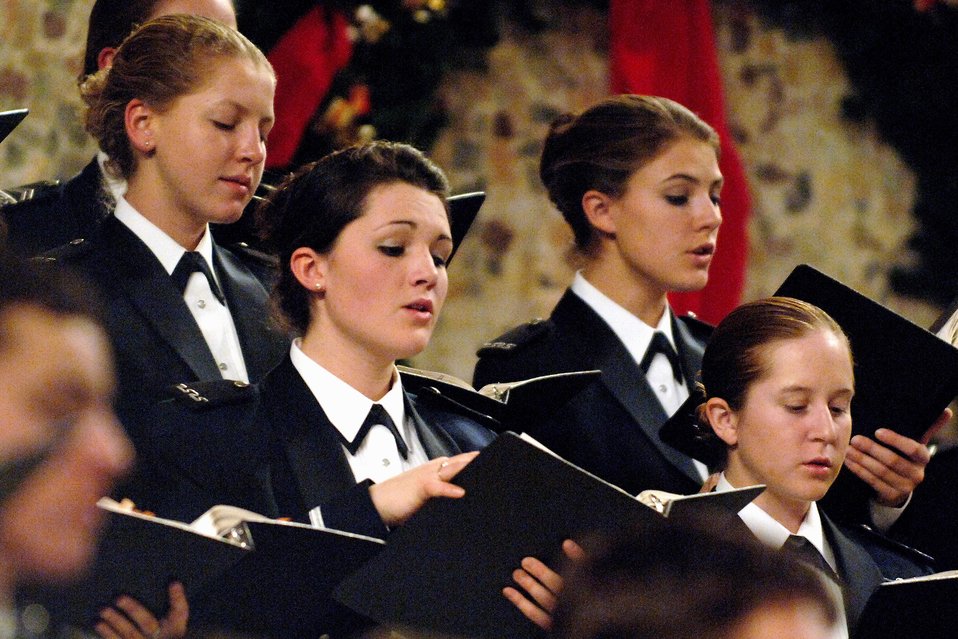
Cadet concert

Cadets perform during the annual U.S. Air Force Academy's